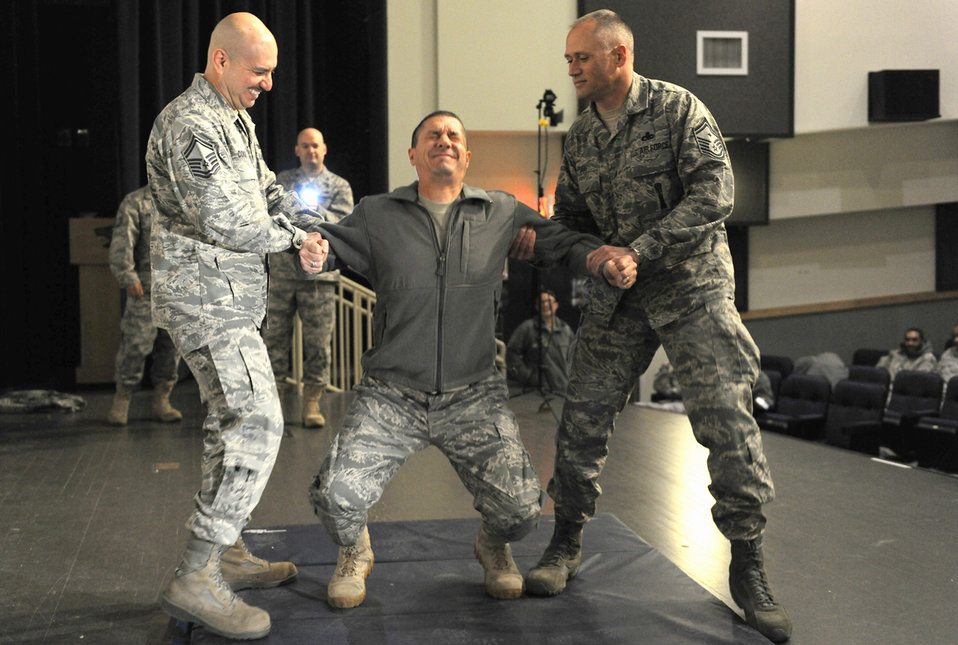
Tasers at Kunsan

Chief Master Sgt. Richard Bruno reacts to being shot in the back with a Taser during a demonstration Dec. 7, 2010, at Kunsan Air Base, South Korea. The Taser is the newest non-lethal-force asset option for security forces members to use to contain potentially harmful situations. Chief Bruno is a member of the 8th Security Forces Squadron.